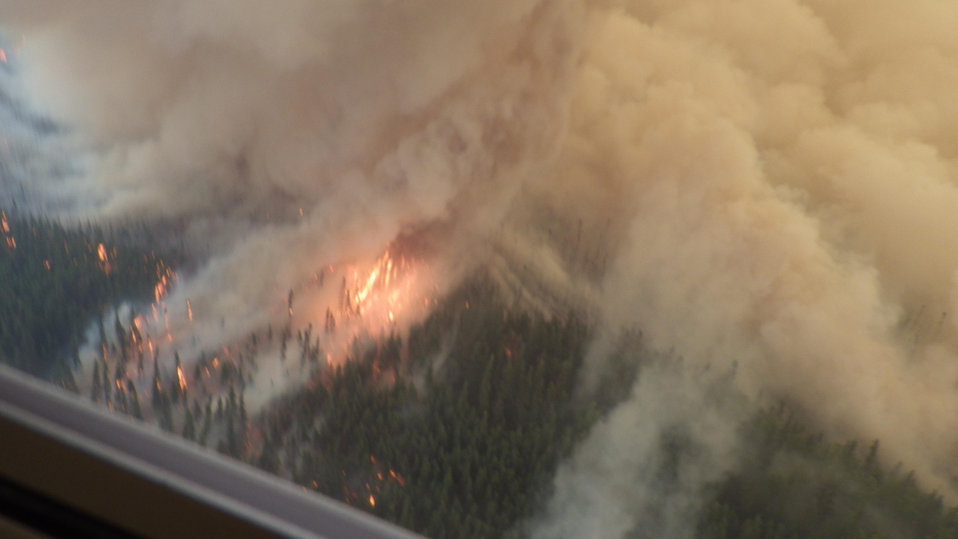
Heat from the Stewart Creek Fire causes a vertical vortex to form. The Stewart Creek Fire located 25 miles east of North Pole, AK began on Jun. 19, 2013 due to human causes and has consumed an estimated 85, 475 acres. The fire is approximately 57% contained.